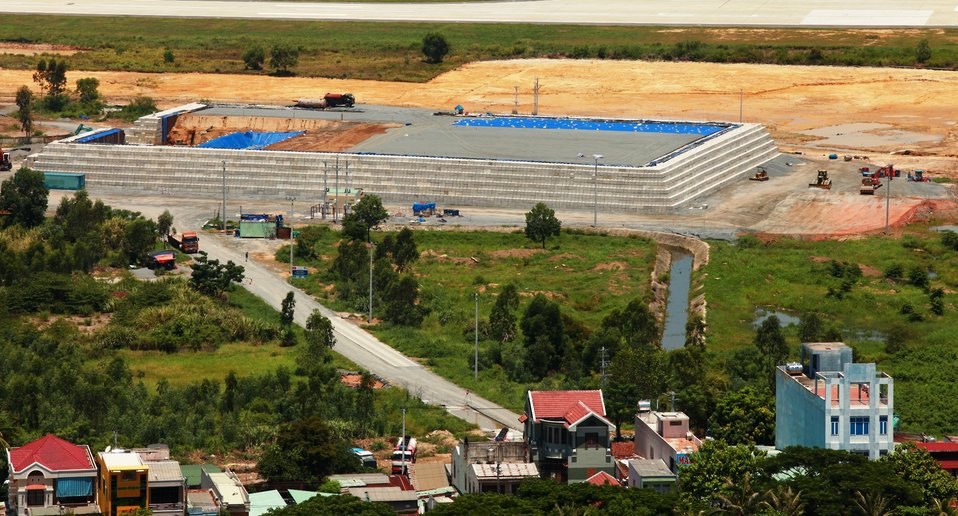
Danang Airport Environmental Remediation of Dioxin Contamination Project

July 12, 2013